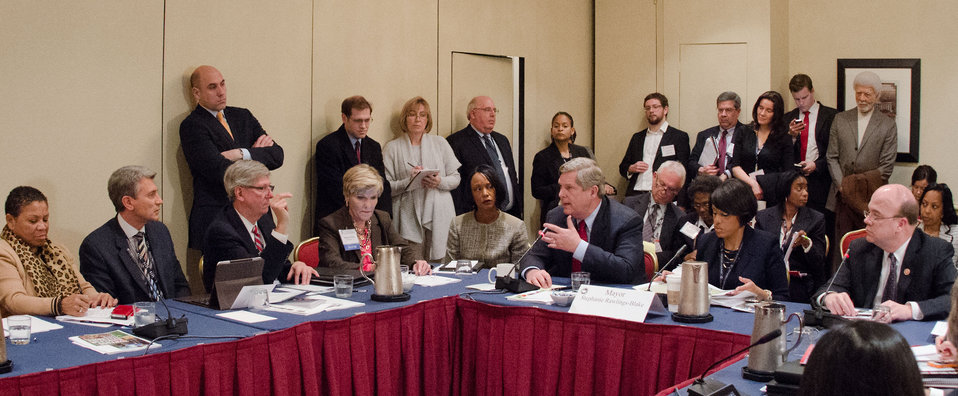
Agriculture Secretary Thomas Vilsack, (at end table with red tie) listens and responds to questions from mayors, during the United States Conference of Mayors 81st Winter Meeting, Food Policy session in Washington D.C., on Thursday, Jan 17, 2013. Some of his responses highlighted the Supplemental Nutrition Assistance Program (SNAP), Know your Farmer Know your Food (www.usda.gov/wps/portal/usda/usdahome?navid=KYF COMPASS) and many other ways that rural America makes a difference.